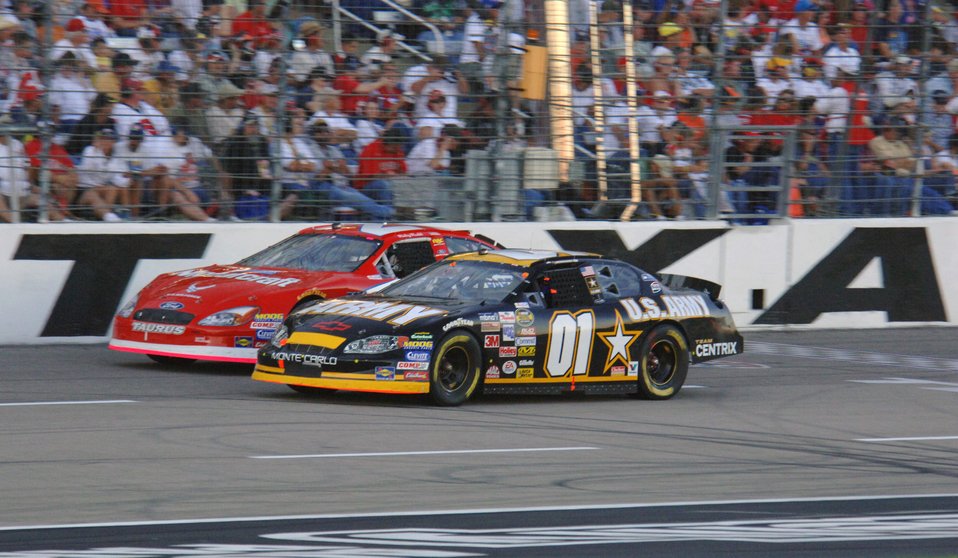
Raceway rumble

TEXAS MOTOR SPEEDWAY, Texas (AFPN) -- The NASCAR Nextel Cup Series Air Force co-sponsored car, number 21, battles for position with Joe Nemecheck driving the Army car, number 01, during the inaugural running of the Dickies 500. Ricky Rudd finished in 13th place, with Joe Nemecheck finishing in 37th place. This is the fifth straight year of the Air Force sponsorship of NASCAR.